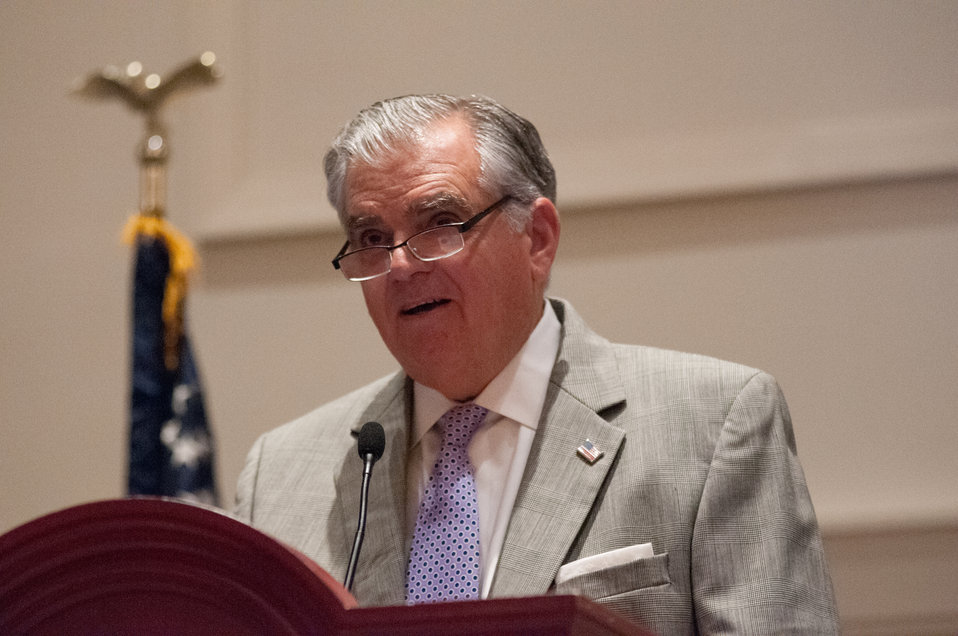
Department of Transportation (DOT) Secretary Ray LaHood speaks about extending for five years its agreement to work with DOT Federal Aviation Administration (FAA) and other partners to help develop a viable biofuel for the aviation industry. The Secretary signed the agreement with U.S. Department of Agriculture (USDA) Secretary Tom Vilsack at the Advanced Biofuels Leadership Conference at Gaylord National Harbor in Maryland, Monday, April 15, 2013.